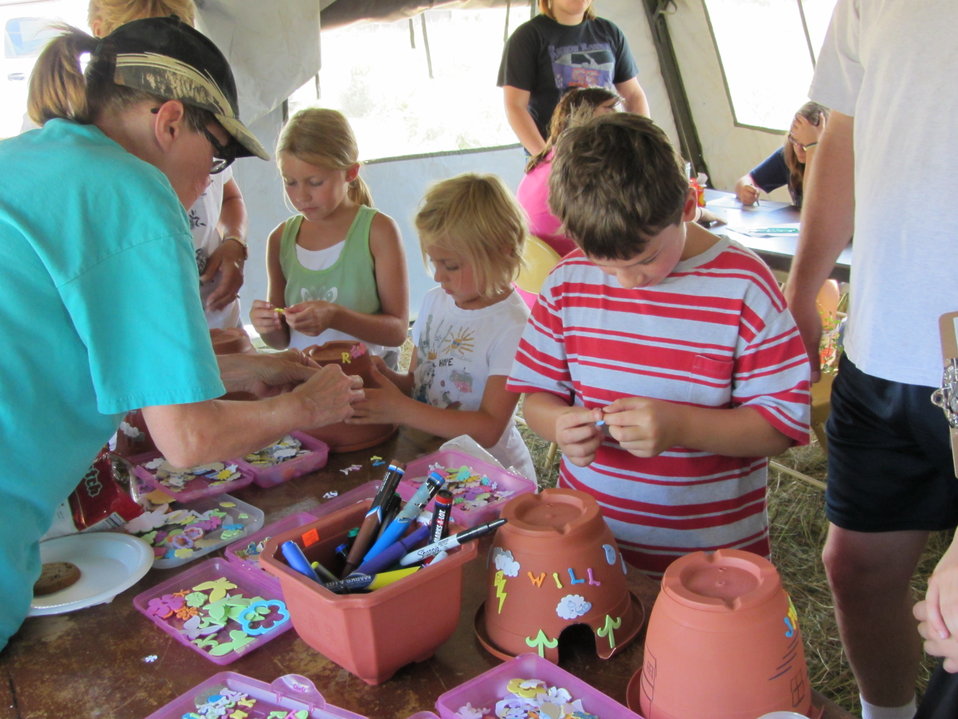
2011 Huron Prairie Fest

More toadhouse decorations.